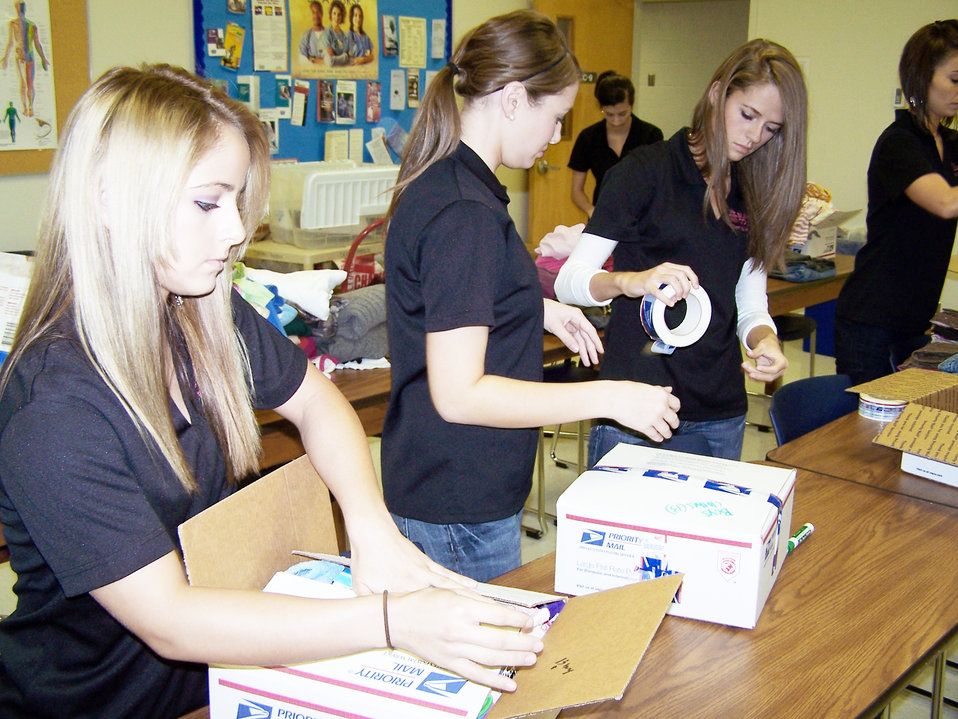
Airmen distribute donations to orphanage in Kyrgyzstan

Blinn College dental hygiene program students in put together boxes of clothing, toys and necessities to send to Kyrgyz children at the Nizhanchuisk Village Orphanage and School in Kyrgyzstan Oct. 24, 2009 in Bryan, Texas. The dental students are very active in community service and took time to put together more than 50 boxes to send to Kyrgyzstan in November.